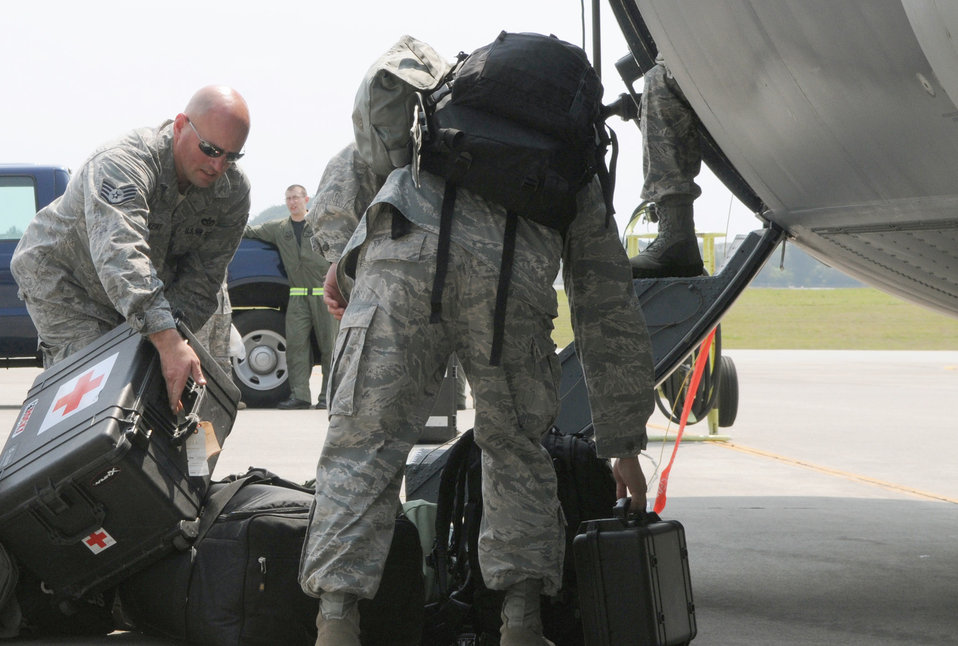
Special ops Airmen deploy additional humanitarian support

Airmen from the 353rd Special Operations Group load medical supplies and personal bags into a MC-130H Combat Talon II March 14, 2011, at Kadena Air Base, Japan. The aircraft is delivering additional equipment and support forces for the 353rd Special Operations Group forces deployed supporting humanitarian relief efforts at Yokota Air Base, Japan.